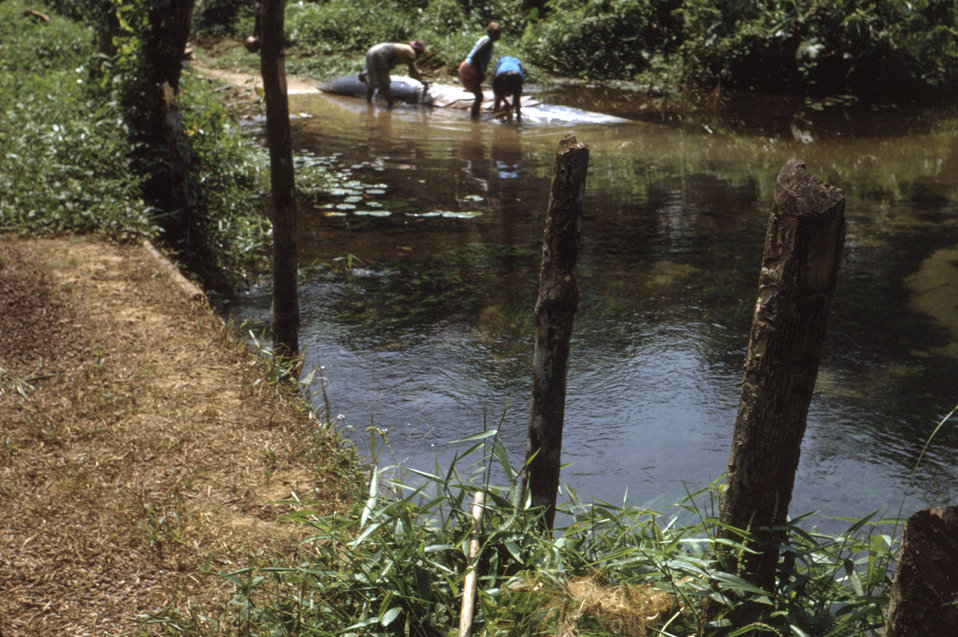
This photograph depicted refugees washing their clothes while staying at a relief camp during the Nigerian civil war in 1968.